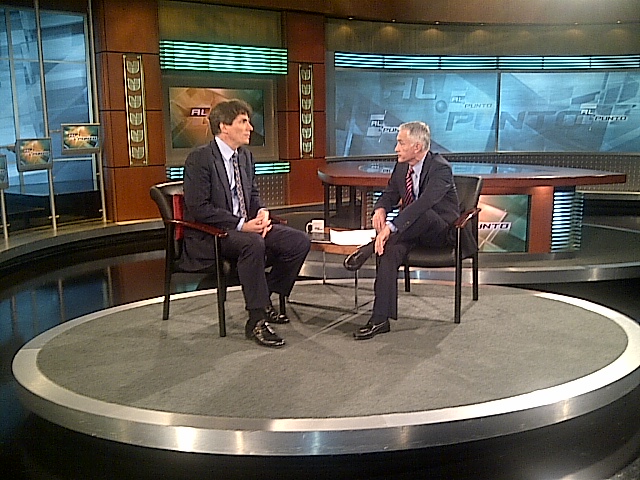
Assistant Secretary Fernandez Discusses the Administration's Focus on Latin America

Assistant Secretary for Economic, Energy and Business Affairs Jose W. Fernandez discusses the Administration’s focus on fostering an equal partnership with Latin America based on mutual respect, common interests, and shared values, in Miami, Florida, on February 4, 2011.